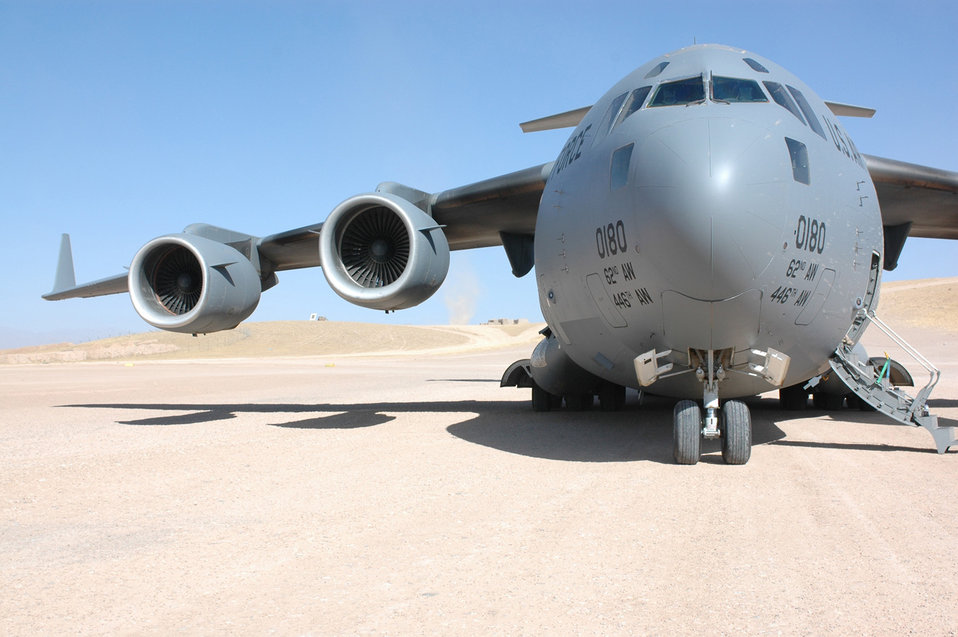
Airpower summary for Aug. 19, 2007

A C-17 Globemaster III awaits cargo at a forward-deployed location. The C-17 is the newest, most flexible cargo aircraft to enter the airlift force. The C-17 is capable of rapid strategic delivery of troops and all types of cargo to main operating bases or directly to forward bases in the deployment area. Coalition C-17s and C-130s flew 156 sorties and delivered more than 785 tons of cargo Aug. 19.